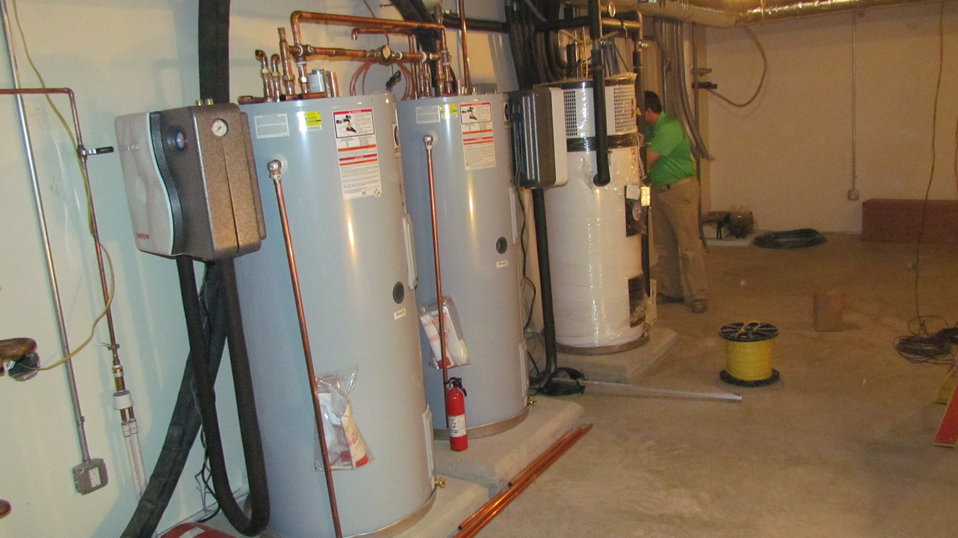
Three different storage tanks that comprise the NZERTF’s domestic hot water system. Starting from the left – the first tank is a nominal 120 gallon tank that is connected to the solar thermal collectors through the use of a heat exchanger; the second tank is a nominal 80 gallon tank that can also be connected to the solar thermal collectors; the third tank (furthest to the right) is the heat pump water heater. The two storage tanks associated with the solar thermal system were installed to give the researchers flexibility in selecting various collector to storage size ratios for research. This system may also be used for a future combined geothermal solar thermal heating system.